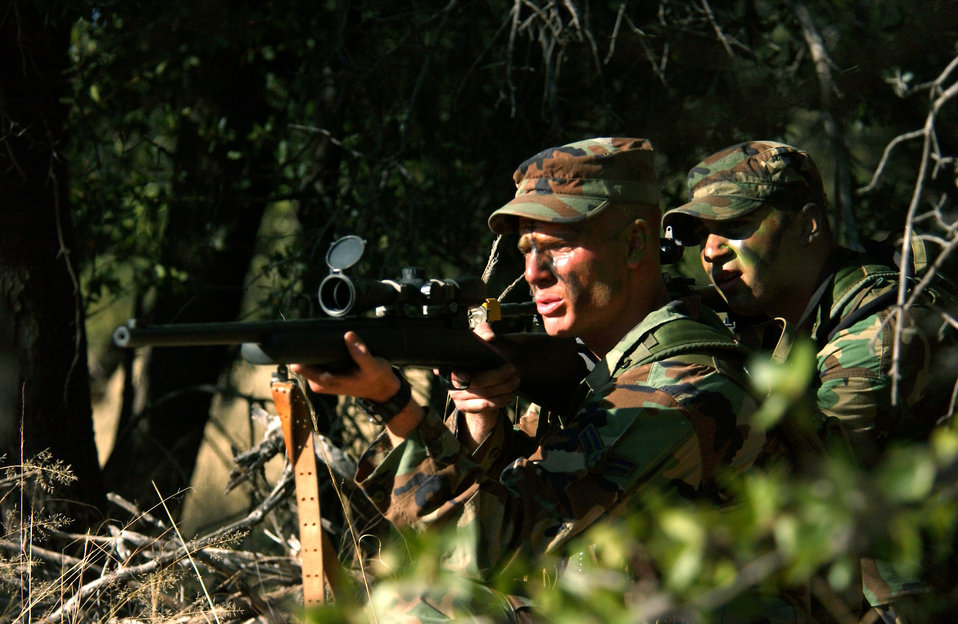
Eye on the target

FORT HUACHUCA, Ariz. -- Senior Airman Adam Dermish and Airman 1st Class Jason Johnston acquire enemy targets during a tactics training exercise Oct. 13. Members of the U.S. Air Forces in Europe Defender Challenge team are spending three weeks here in preparation for the 2004 Defender Challenge competition. Defender Challenge held at Lackland Air Force Base, Texas, is a security forces competition pitting competitors from major commands against one another over a series of events including marksmanship, tactics and physical fitness. Both Airmen are assigned to the 48th Security Forces Squadron, Royal Air Force Lakenheath, England.